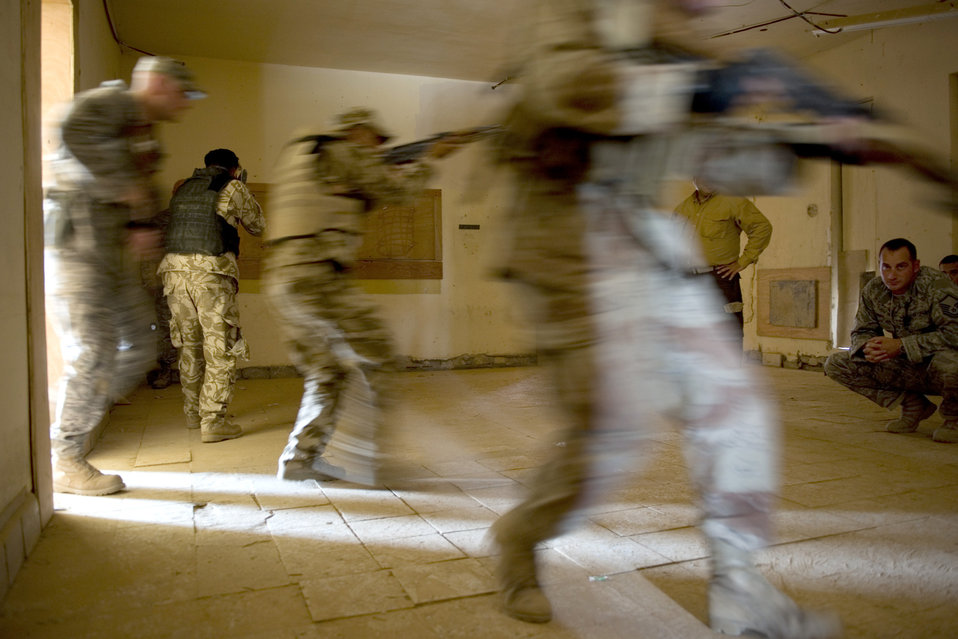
Sather Airmen take Iraqi security training to next level

Iraqi security forces members storm a room as Air Force trainers with the 447th Expeditionary Security Forces Squadron evaluate their tactics May 23, 2011, at Sather Air Base, Iraq. The Iraqi service members were undergoing advanced security forces training to prepare for personal security detail training.